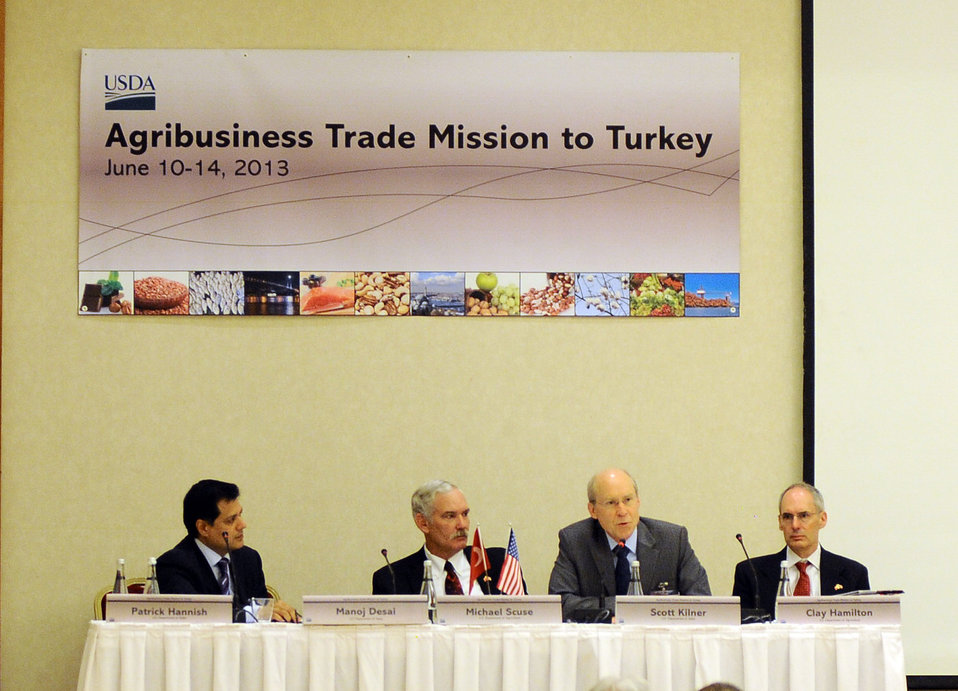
Agriculture Acting Deputy Secretary Michael Scuse heads the Executive Country Team Briefing for the U.S. Delegation at the start of the Agibusiness Trade Mission to Turkey in Istanbul, Turkey on Monday, Jun. 10, 2013. The goal of the mission is to promote U.S. agricultural exports to Turkey. Representatives from Iowa, Minnesota, Missouri, Nebraska, North Dakota, and Pennsylvania, as well as 20 U.S. companies are participating. (L to R U.S. Consulate General Istanbul Political/Economic Section Chief Patrick Hannish, Agriculture Acting Deputy Secretary Michael Scuse, U.S. Consulate General Istanbul Consul General Scott Kilner, and U.S. Embassy Ankara Agricultural Counselor Clay Hamilton).